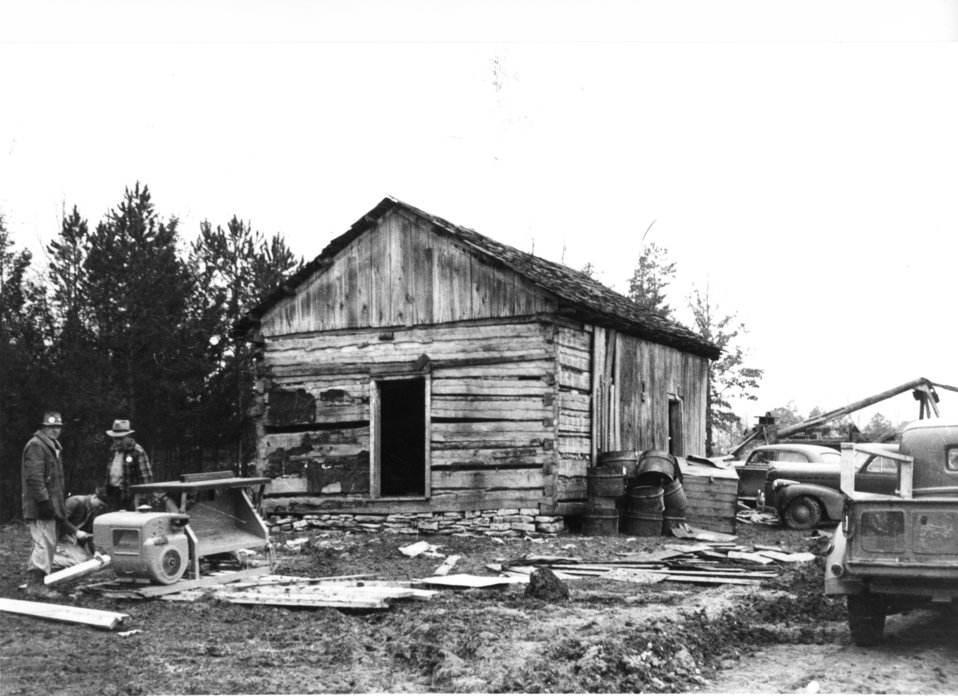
Early settlers at Oak Ridge